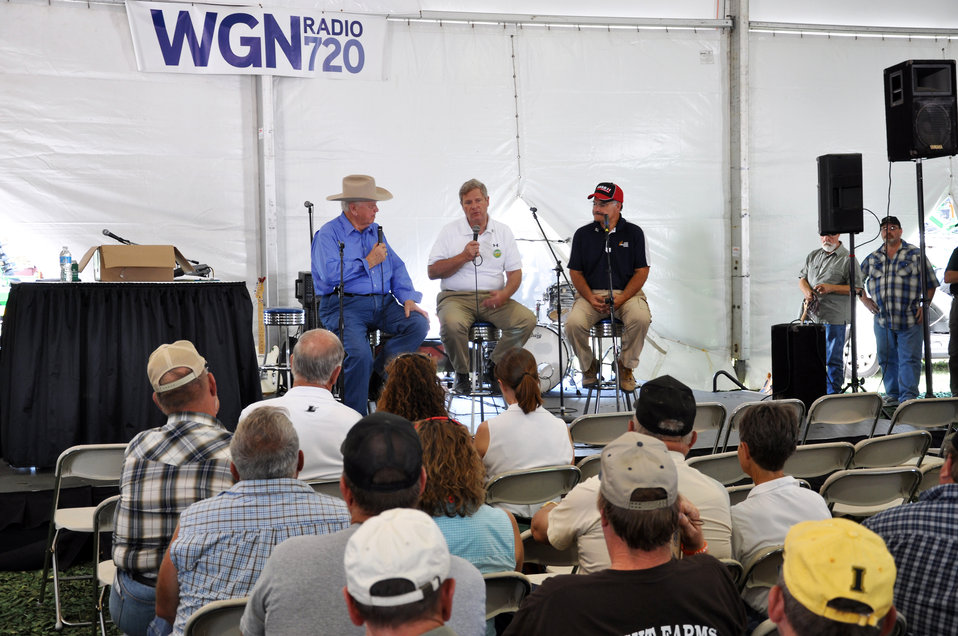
Agriculture Secretary Tom Vilsack (center) visits with Orion Samuelson (left) and Max Armstrong of WGN Radio during the 2012 Farm Progress Show in Boone, Iowa, on Aug. 30, 2012.